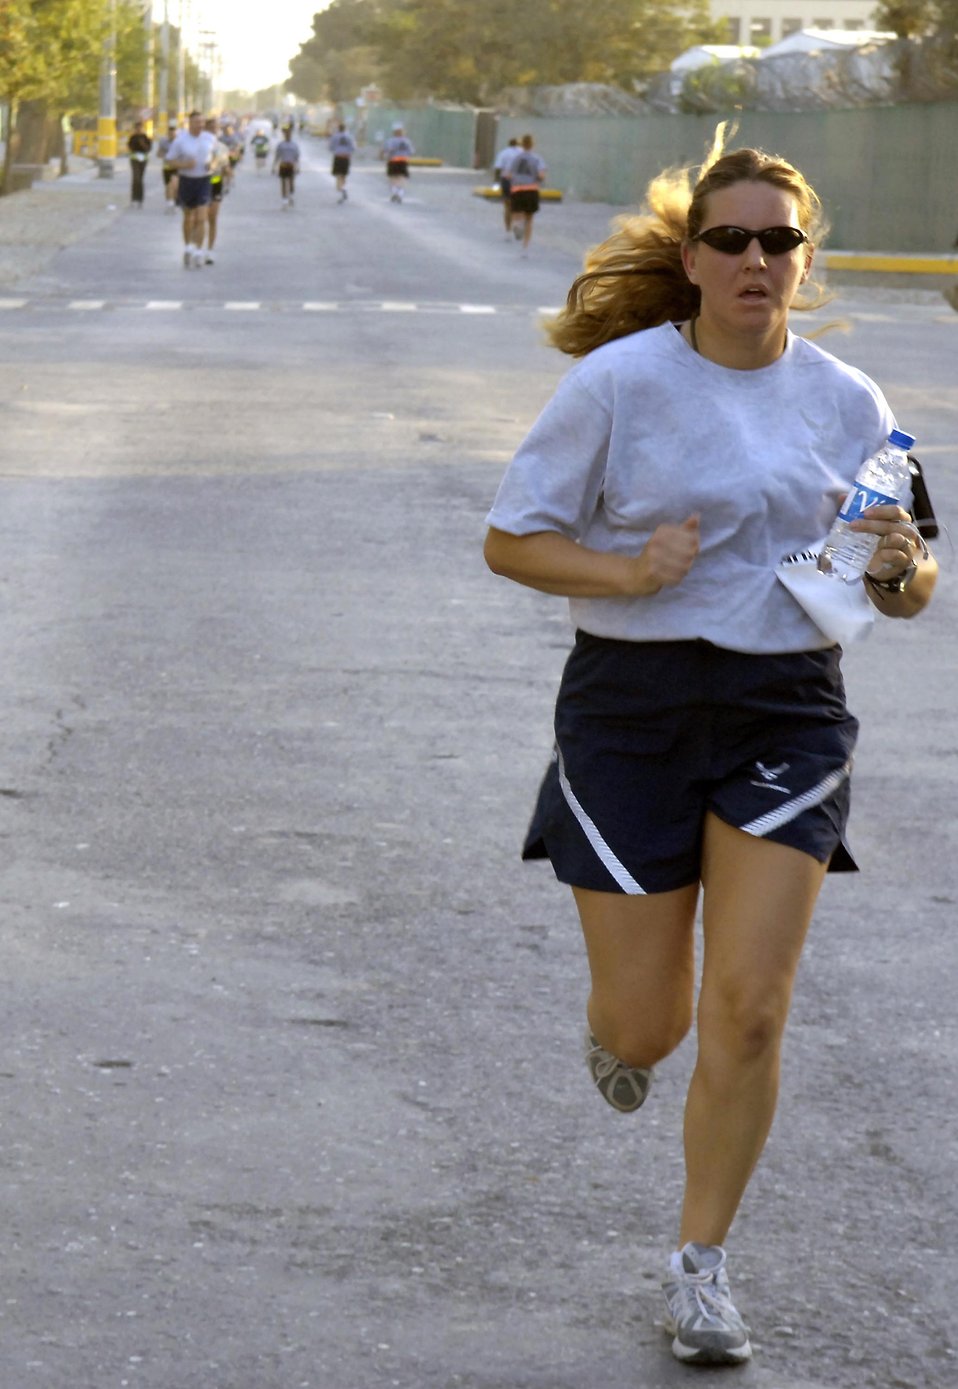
Running for more than fitness

Tech. Sgt. Jacqueline Baumeyer was one of more than 900 servicemembers to participate in the Women's Equality Day 5K run at Bagram Air Base, Afghanistan, Aug. 28.